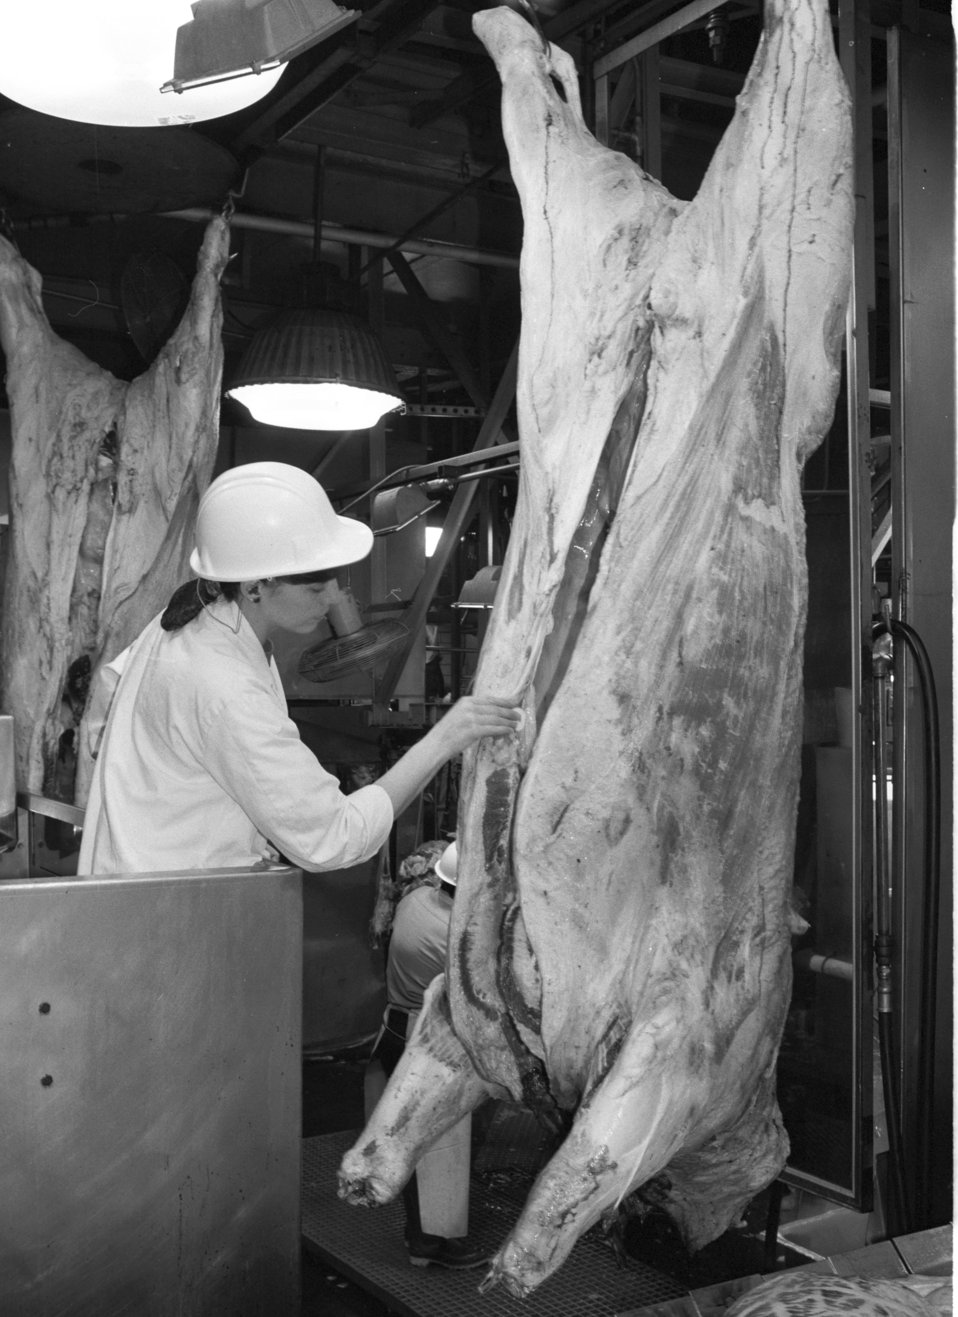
U.S. Department of Agriculture (USDA) Food Safety Inspection Service (FSIS) inspectors inspect beef using a Streamline Inspection System (SIS) at a processing plant in Plainview, TX on January 22, 1991.